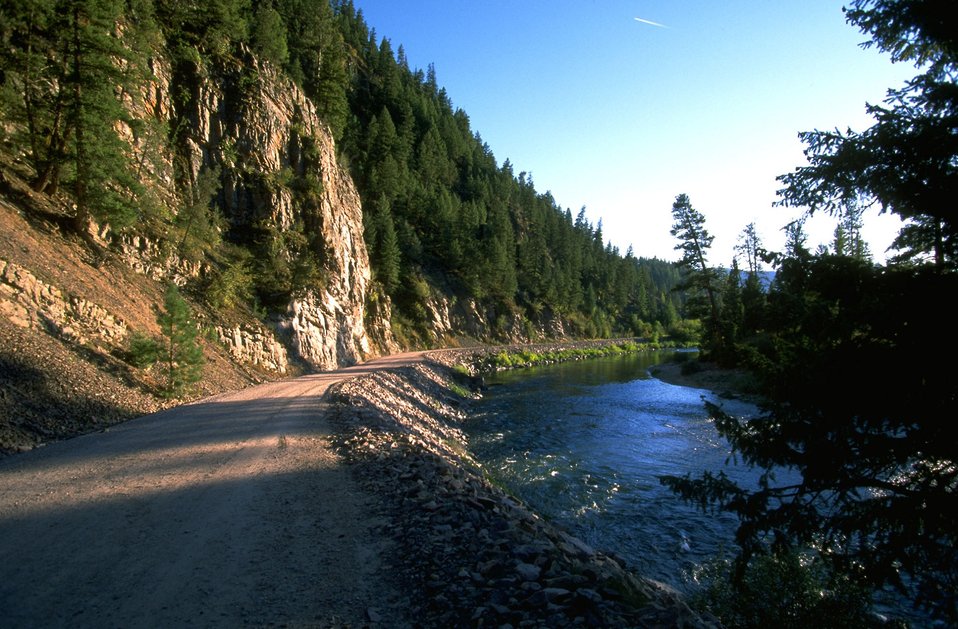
McNamara Road along the Blackfoot River